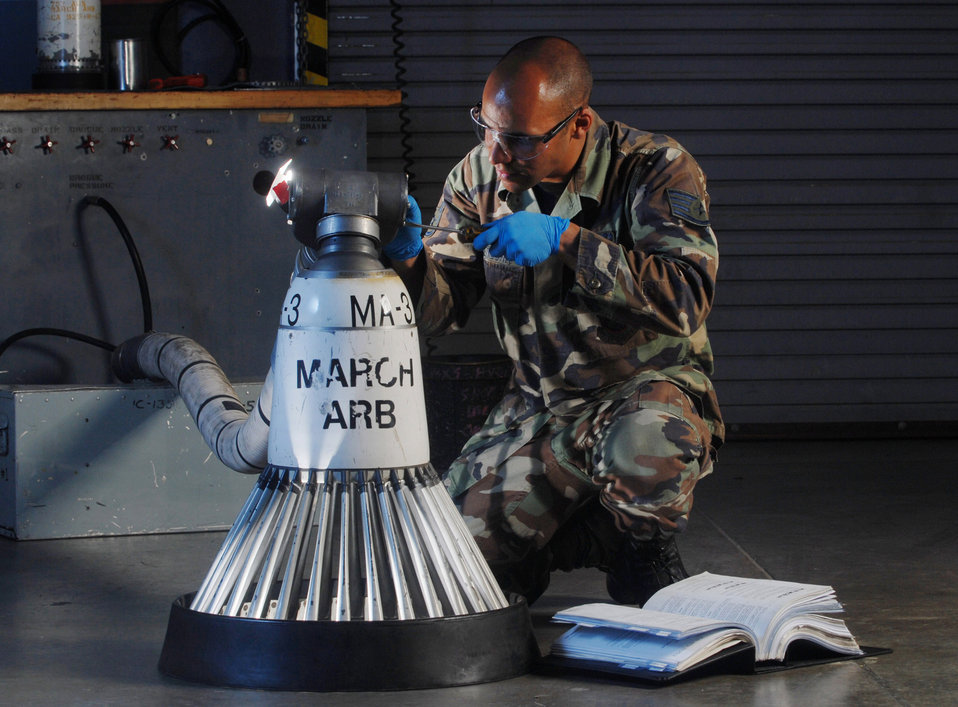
Refueler maintenance

Staff Sgt. Chris Wietecha conducts a pressurization test March 25 on a KC-135 Stratotanker aerial refueling drogue. He is with the 452nd Maintenance Squadron's aircraft pneudraulics systems shop at March Air Reserve Base, Calif. March ARB, located in Southern California, is home to the largest air mobility wing in the Air Force Reserve Command.